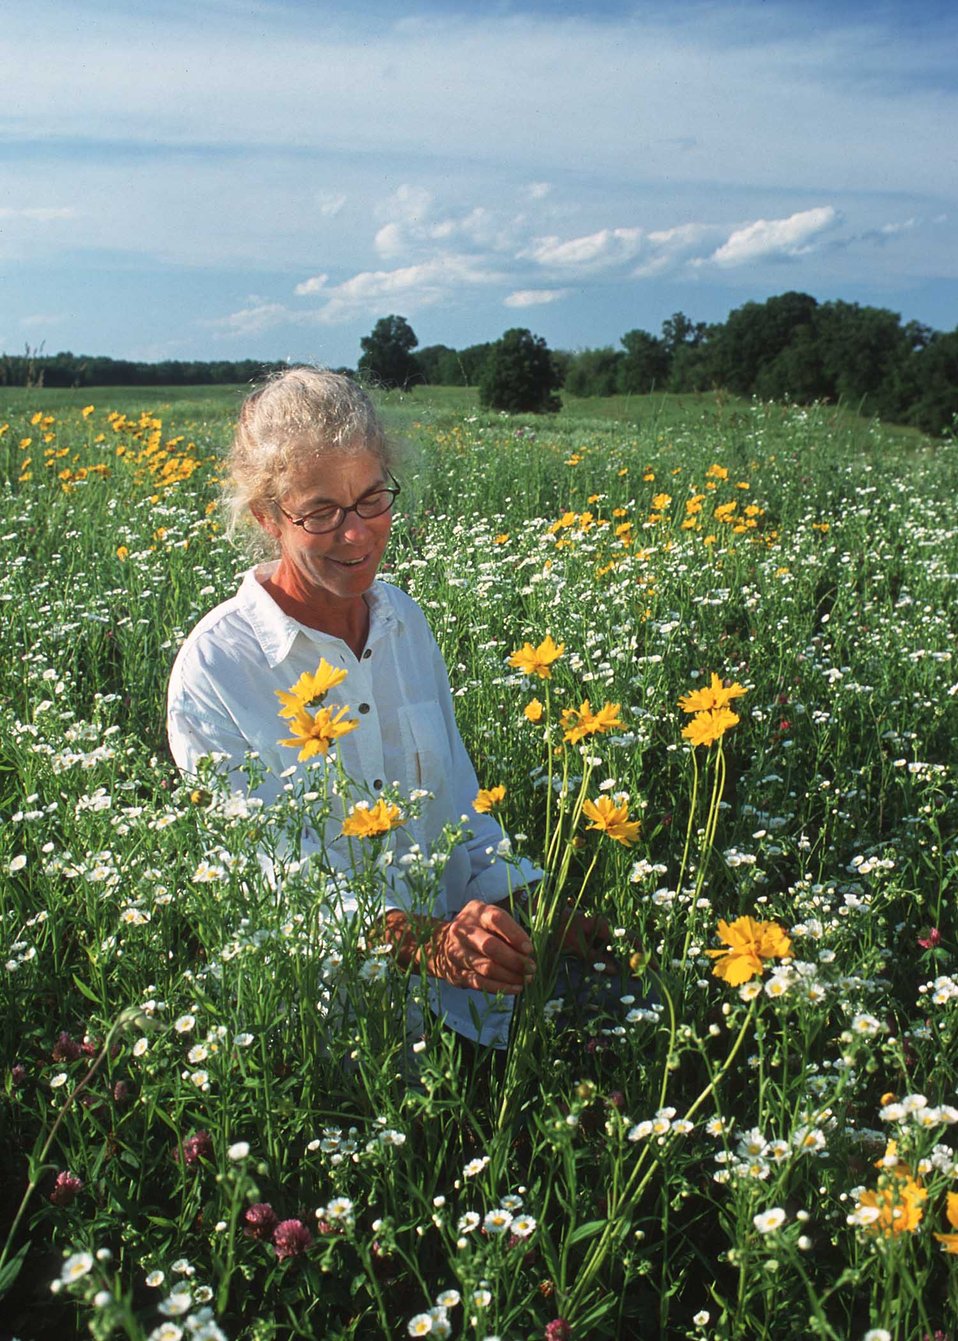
Landowner in a wildflower planting providing wildlife habitat. Mecosta County, Michigan.